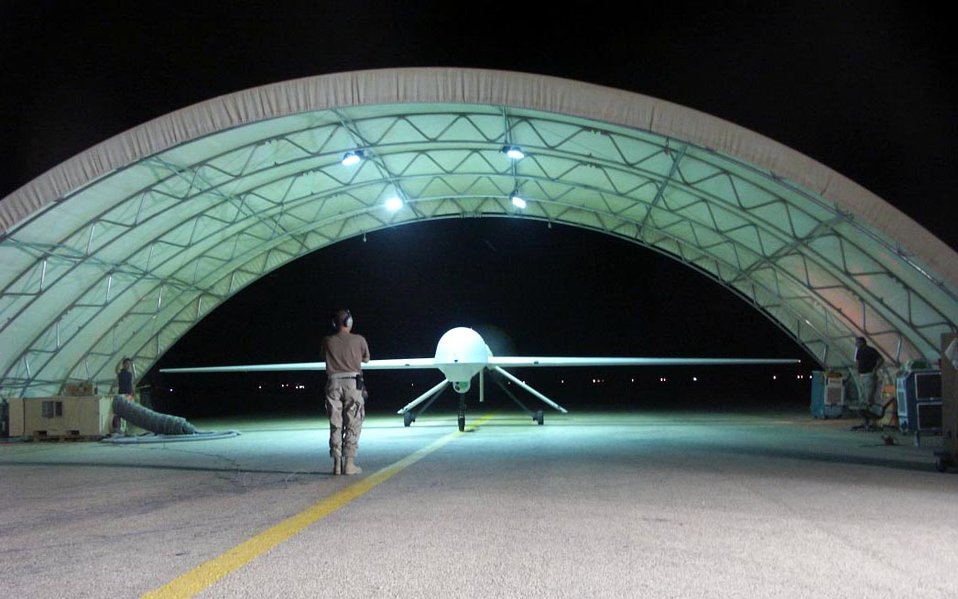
The Predator waits

TALLIL AIR BASE, Iraq -- A 64th Expeditionary Reconniassance Squadron airman guides a Predator unmanned aerial vehicle into its hangar here following a mission. The Predators roam the skies of Iraq providing real-time information to commanders around the world.